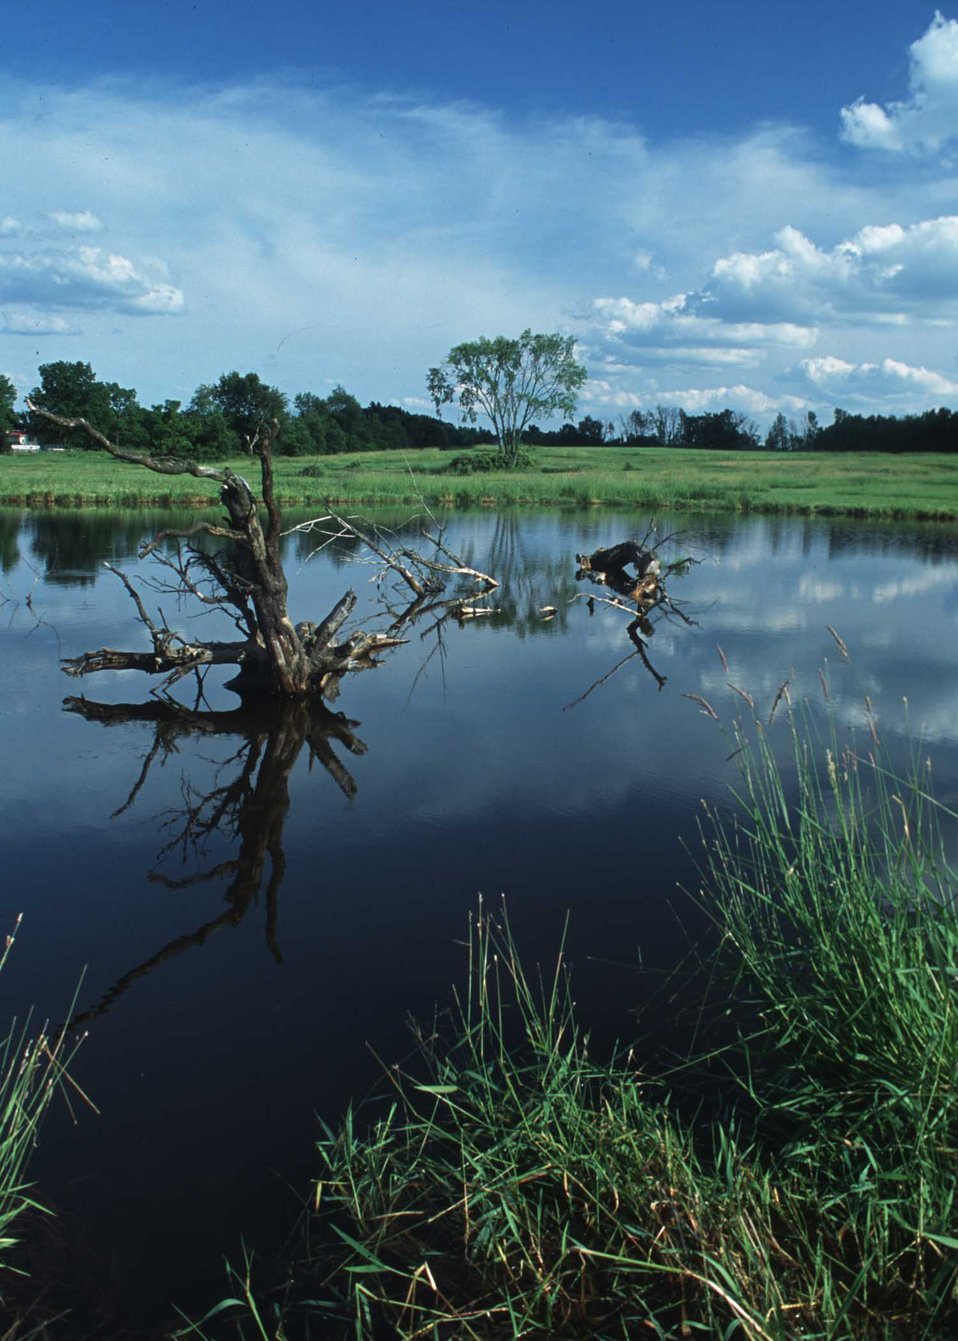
Scenic open water wetland with water in foreground, Montcalm County, Michigan.